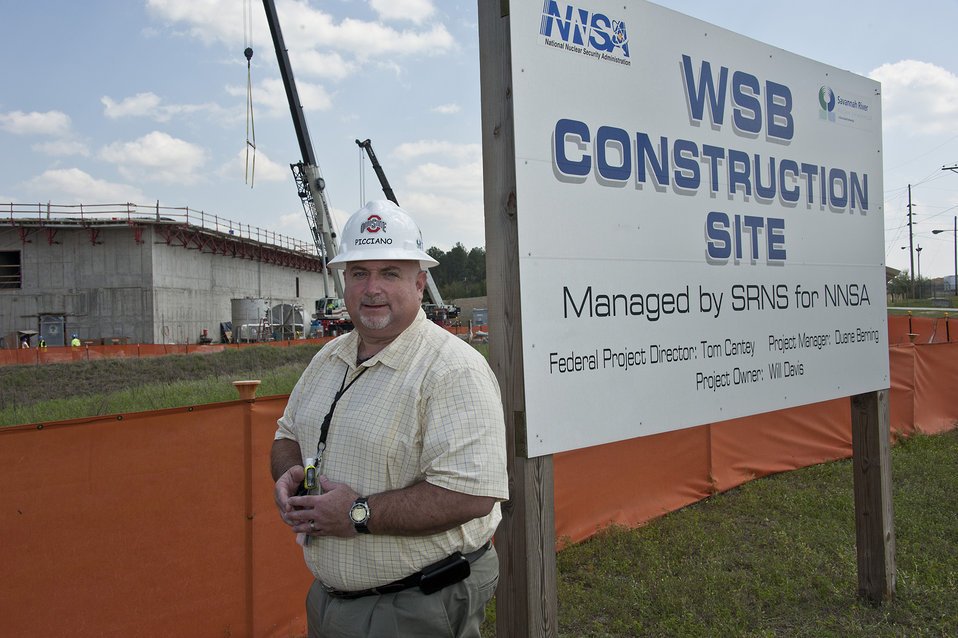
Bill Picciano, SRNS

Bill Picciano started at SRS as a Recovery Act logistics expediter. A year later, training led him to a permanent position with Savannah River Nuclear Solutions as an associate engineer technical support specialist on the Pit Disassembly and Conversion Project and the Waste Solidification Project.